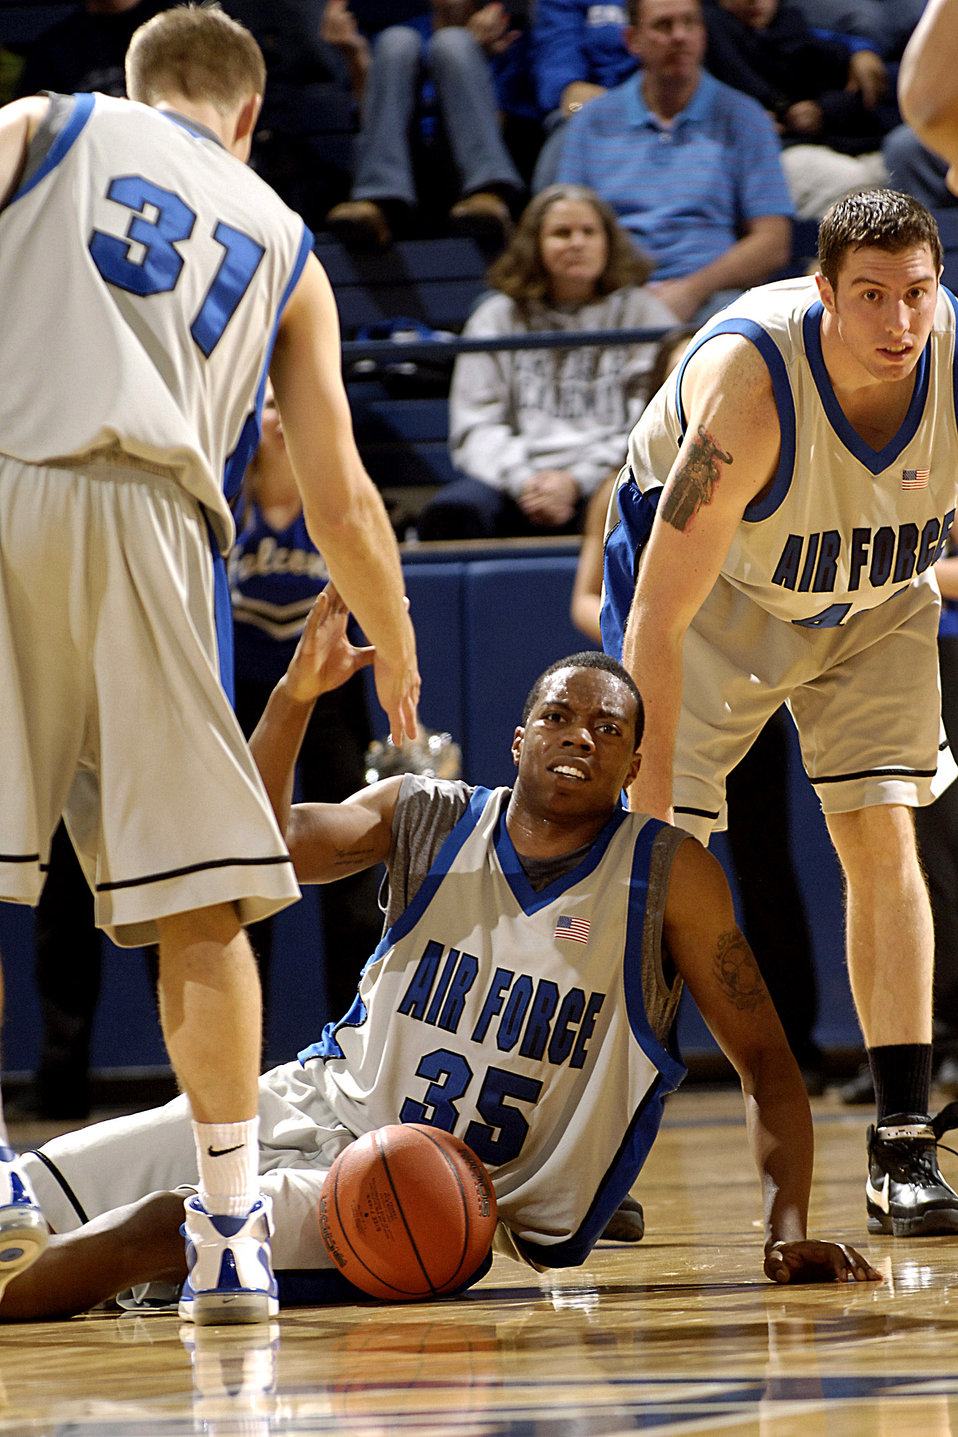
Academy defeats UNLV 65-53

U.S. Air Force Academy junior forward Matt Holland and senior center Keith Maren lend a hand to freshman guard Evan Washington as the Academy beat University of Nevada Las Vegas, 65-53, Jan. 13 in a Mountain West Conference game in Clune Arena at Colorado Springs, Colo. Maren chipped in with one of his best performances of the season, scoring nine points, grabbing a team-best six rebounds and handing out a career-best six assists. His six assists are the most by a Falcon this season.